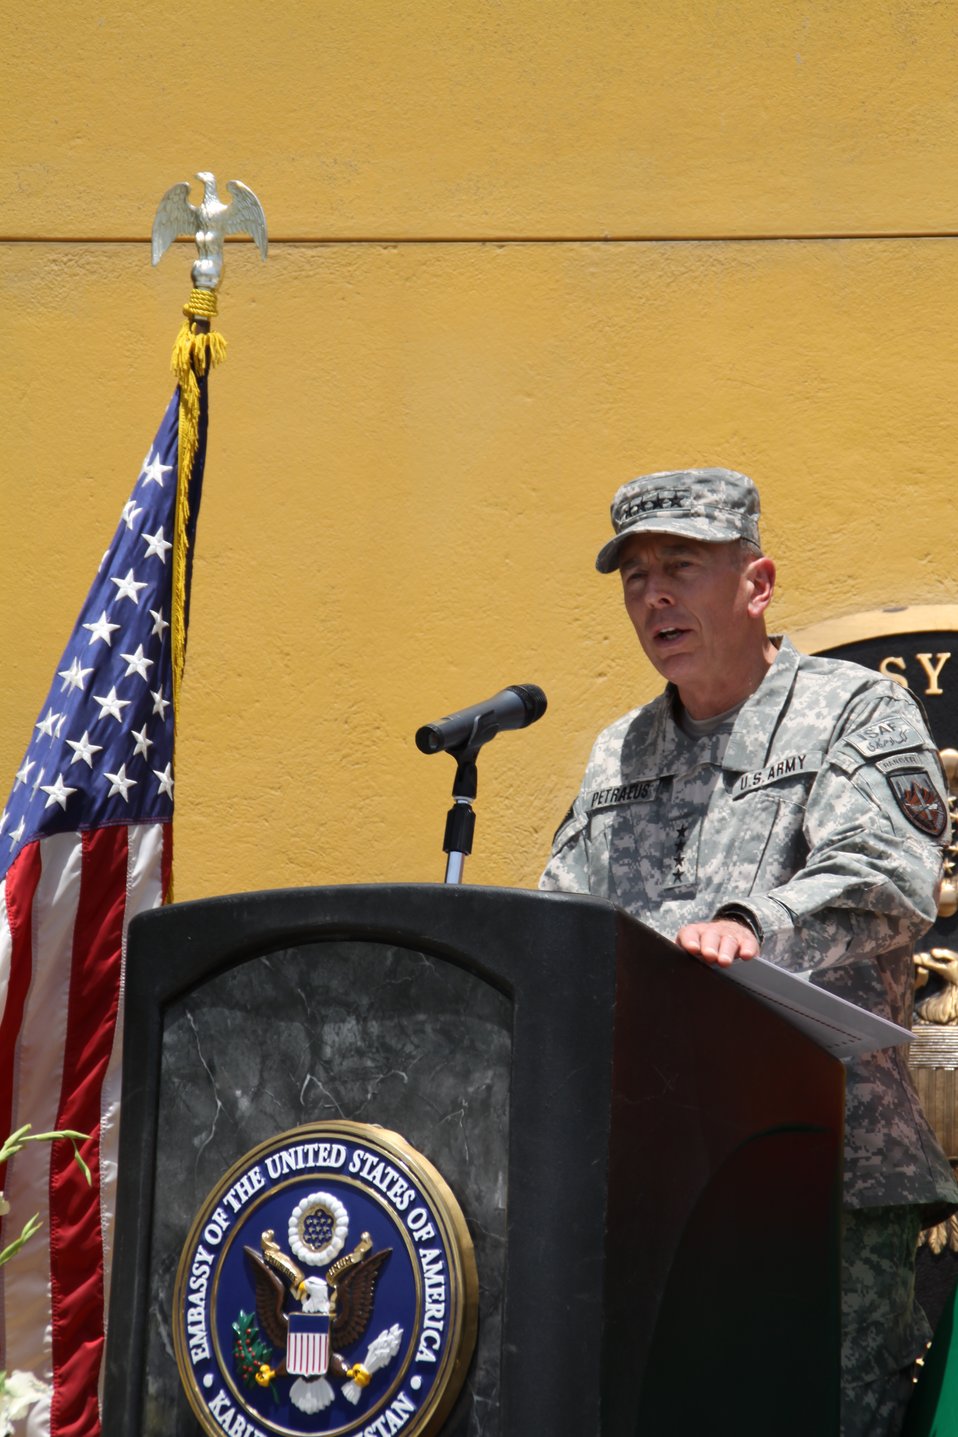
Kabul Official July 4th Celebration